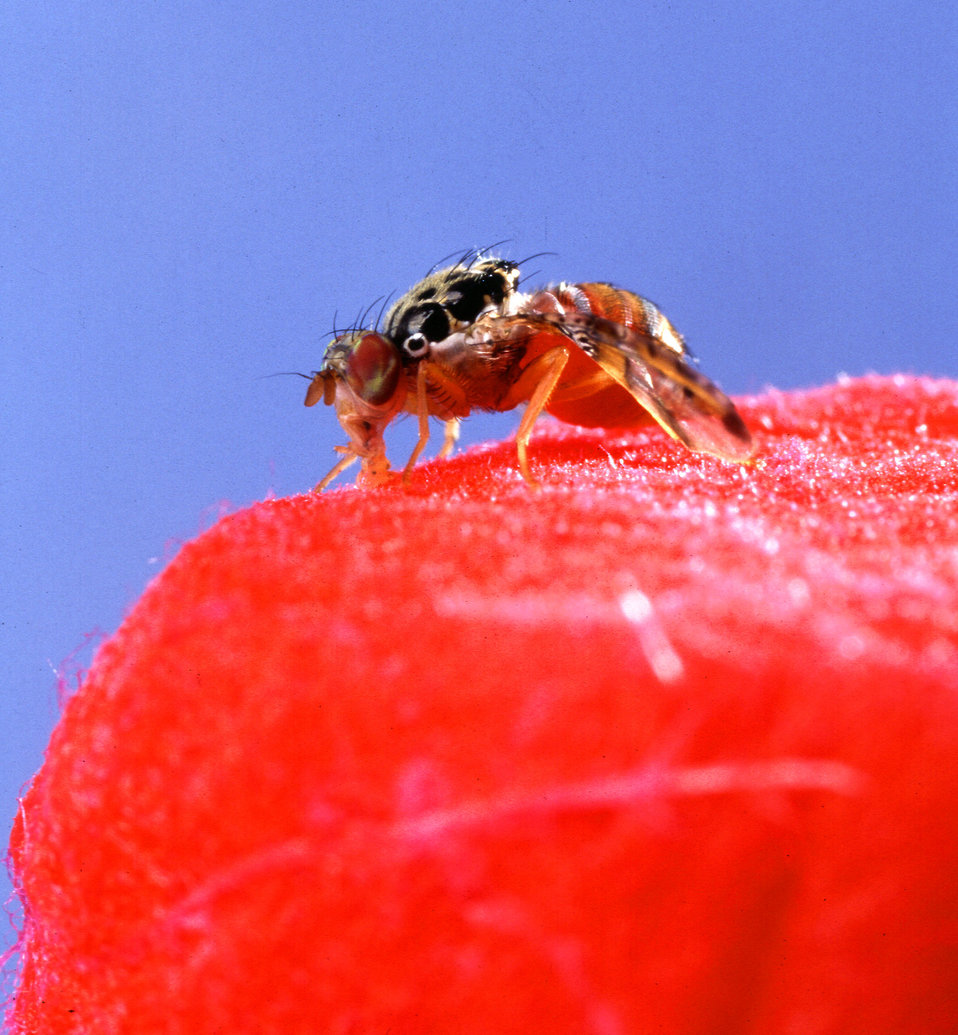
A Mediterranean fruit fly or Medfly feeds on a cotton wick soaked with a bait-dye mixture.